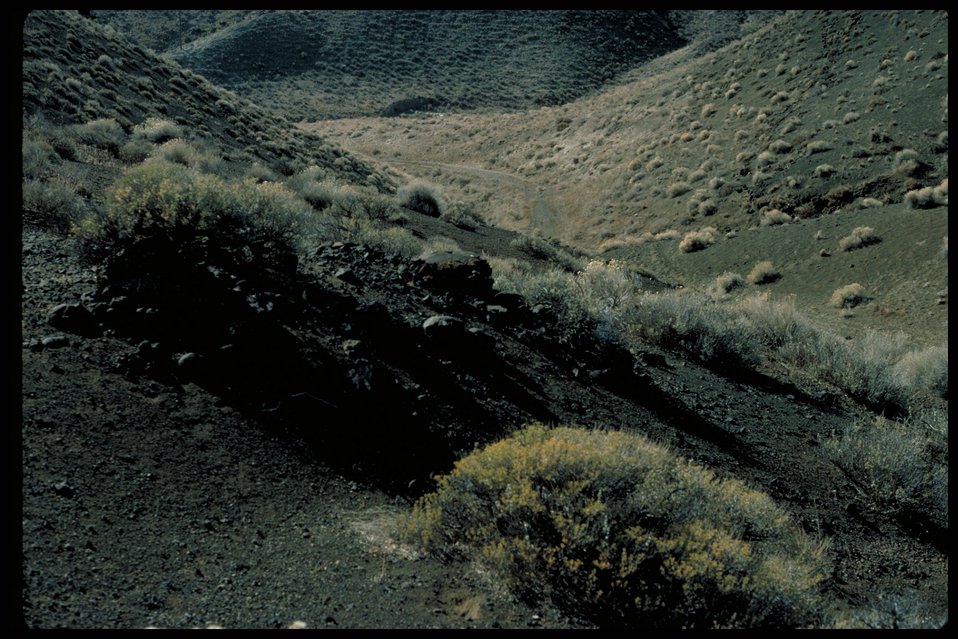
Oregon Trail near Sinker Creek Butte Lower Snake River District